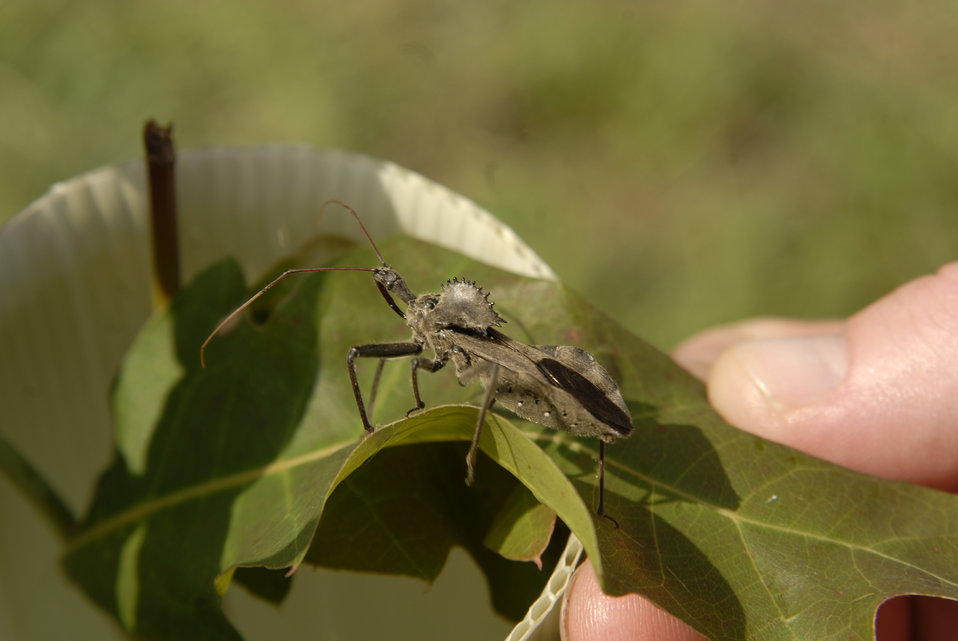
The wheel bug (Arilus cristatus from the family Reduviidae) sits on a leaf seeking its prey. Wheel bugs are considered beneficial insects because the prey upon harmful pests (such as caterpillars and Japanese beetles), although they can inflict a painful bite if handled carelessly. These bugs are common in eastern North America and they are camouflaged and very shy, hiding whenever possible. The adult is gray to brownish gray in color and black shortly after molting, but the nymphs (which do not yet have the wheel-shaped structure) have bright red or orange abdomens. The wheel bug received its name from the gear-like prominence on the pronotum.